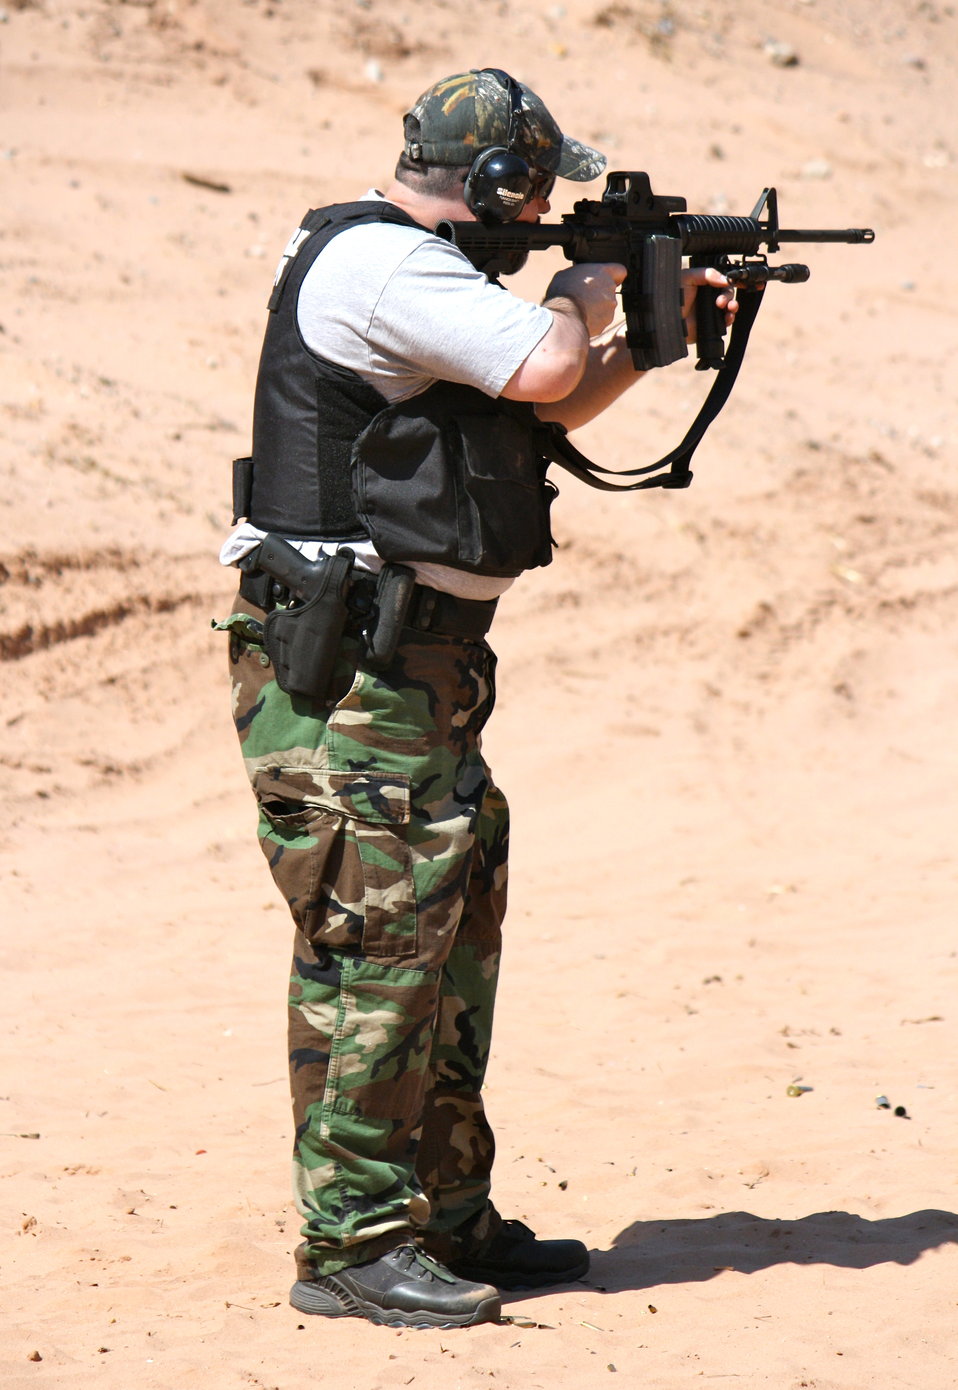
Special Agent Shooting with AR-15

Law Enforcement target practice at outdoor shooting range in Glastonbury, CT.